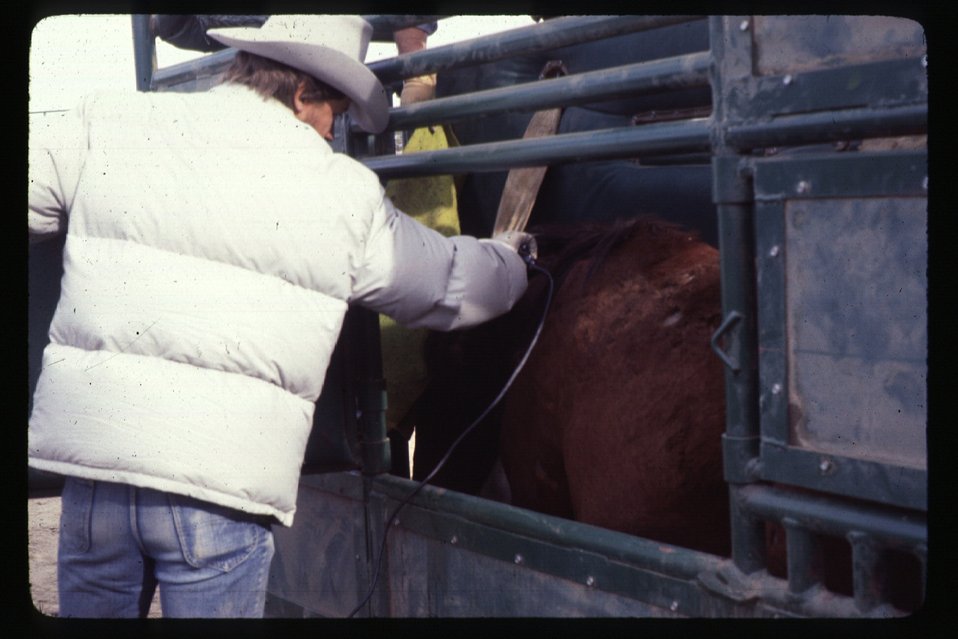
Loading wild horse in chute Wild Horse and Burro Adoption Program LSRD Lower Snake River District